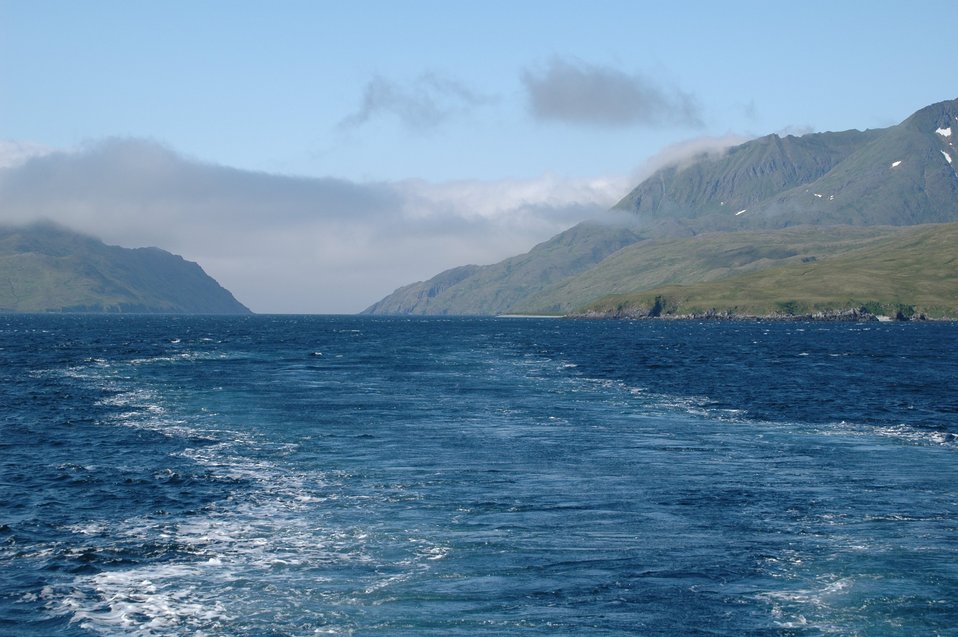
Kagalaska Strait